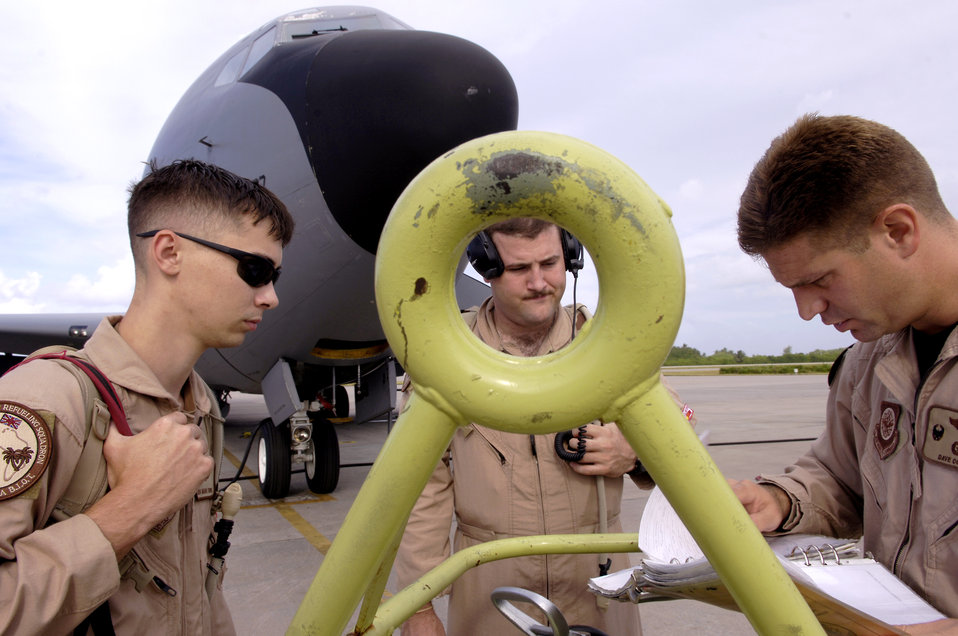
Gettin' ready to fly

(Left to right) Senior Airman Mark Fiorotto, Capt. Brad Post and Lt. Col. David Cohen go over preflight paperwork before boarding their KC-135 Stratotanker for a refueling mission in support of Operation Enduring Freedom. The crew is with the 28th Expeditionary Air Refueling Squadron.